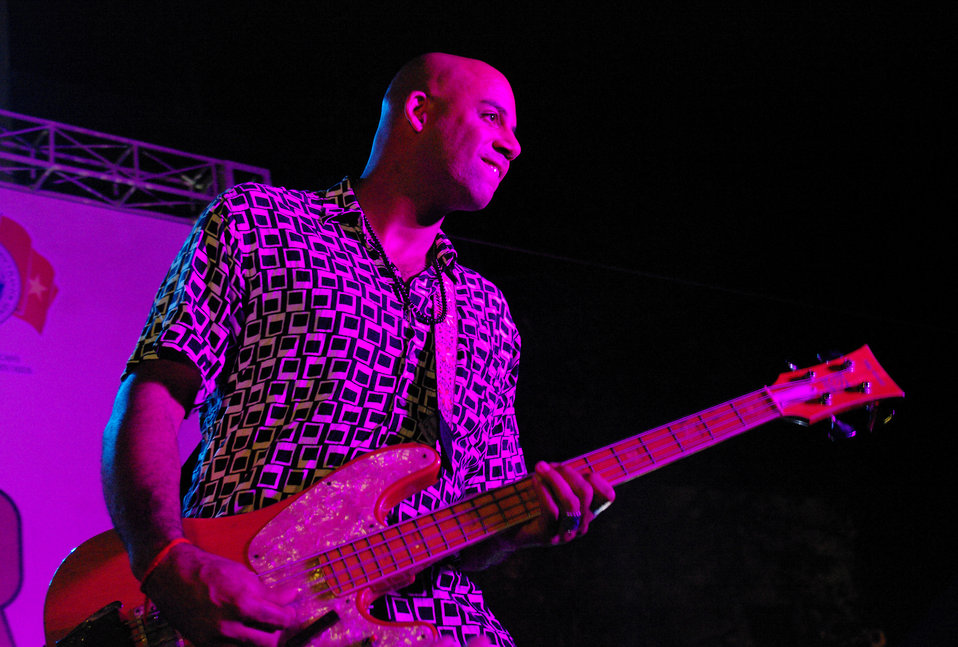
PEPFAR, U.S. Embassy Host Dengue Fever Concert in Hanoi